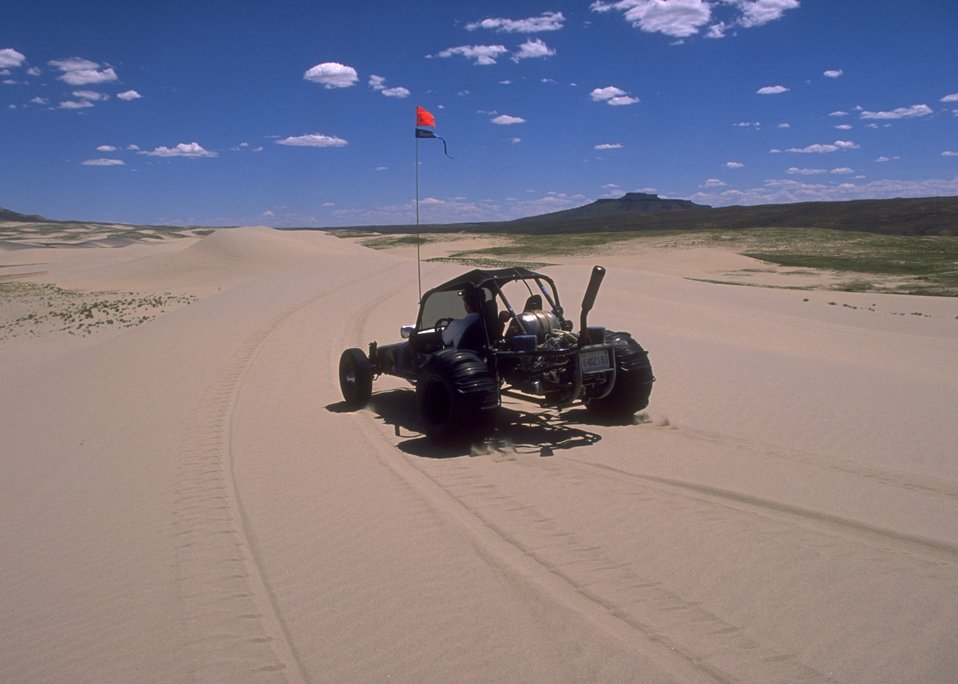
Sand Dunes OHV Area, Rock Springs Field Office.